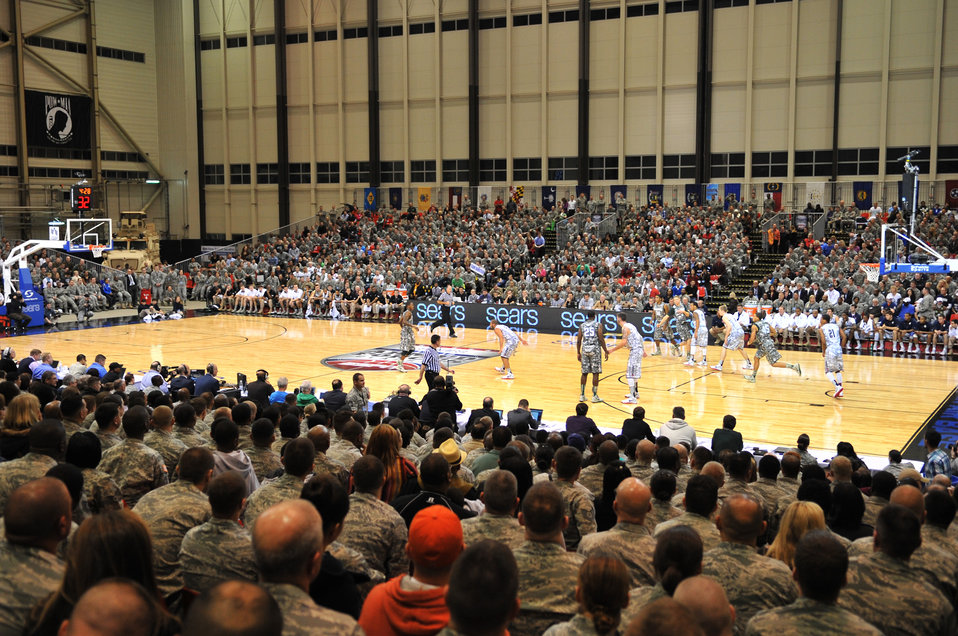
Armed Forces Classic

Service members watch the Armed Forces Classic basketball game between the Michigan State Spartans and University of Connecticut Huskies at Ramstein Air Base, Germany, Nov. 10, 2012. The Huskies overcame the Spartans 66-62.